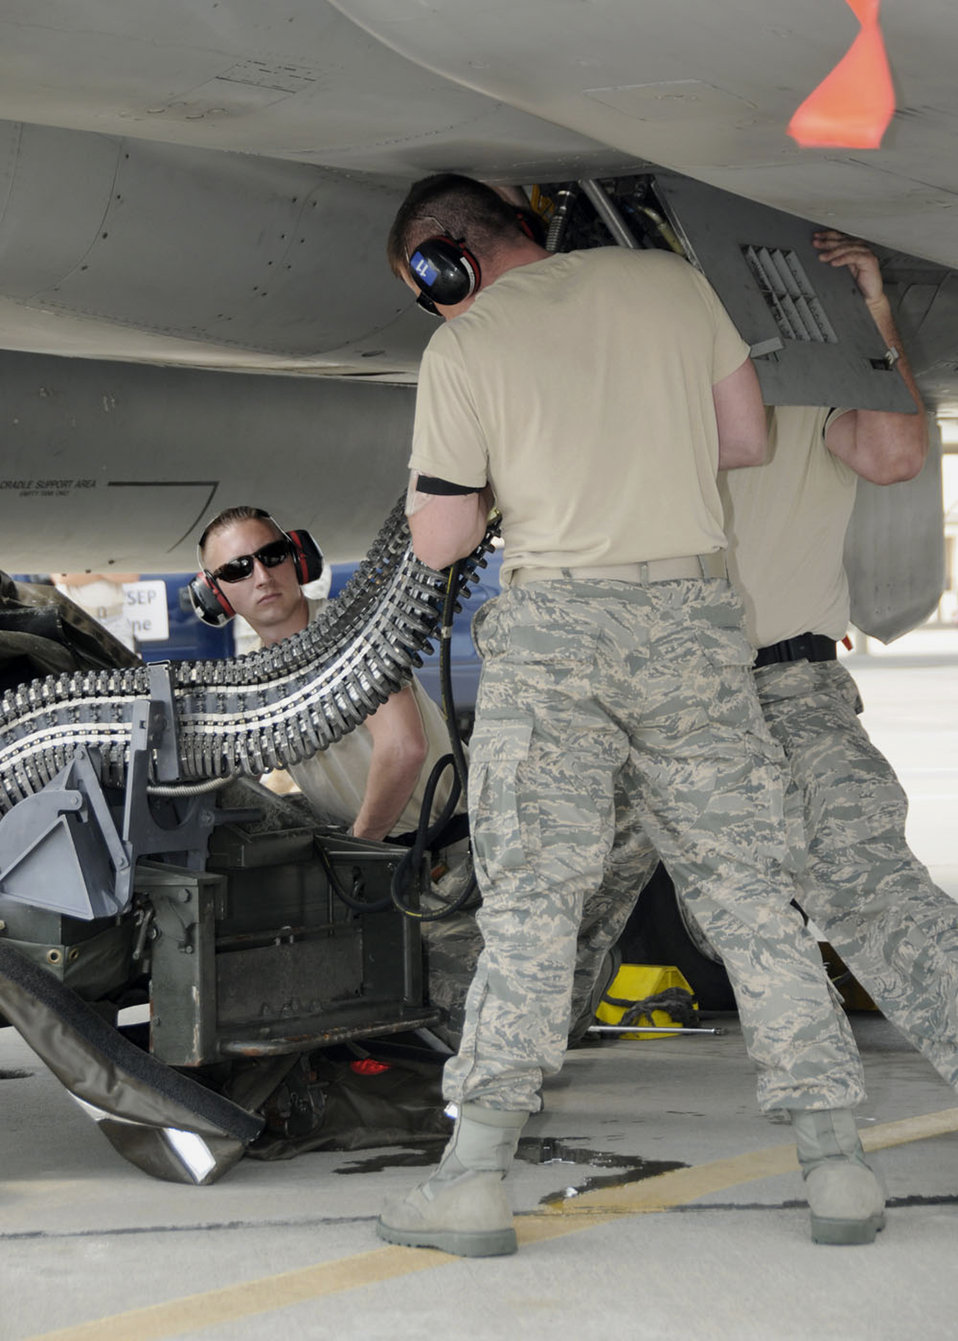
Bullets for another day

Tech. Sgt. Terrance Brown, Tech. Sgt. Scott Gemelli and Staff Sgt. Ryan Quigley unload ammunition from an F-15 Eagle April 19, 2011, at Tyndall Air Force Base, Fla. The three NCOs from the Massachusetts Air National Guard?s 104th Fighter Wing are deployed there for training.